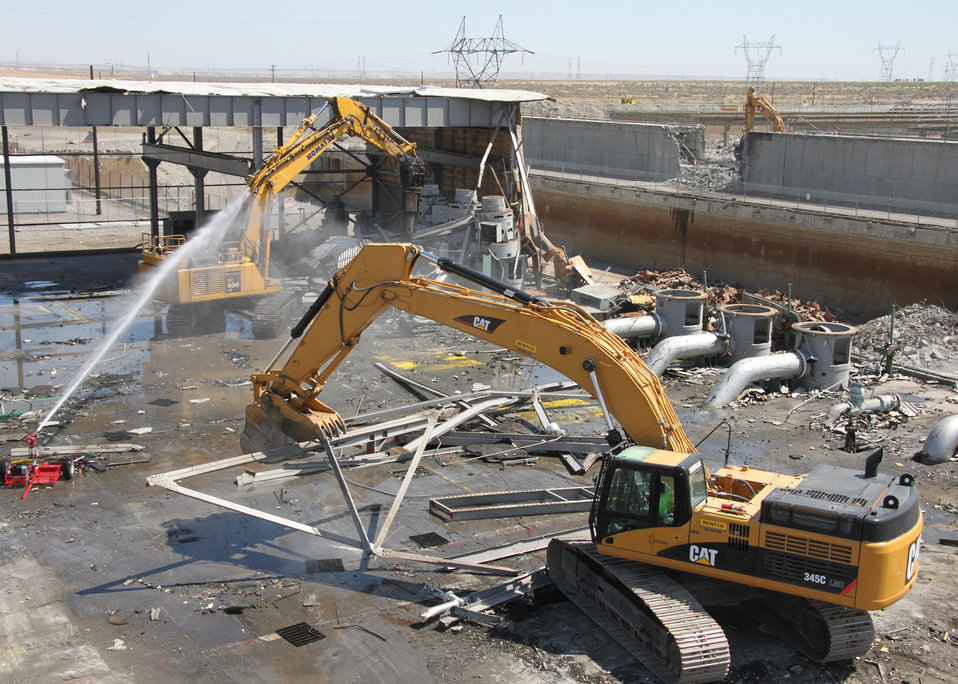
Recovery Act accelerated cleanup at Hanford

Recovery Act funds were used to accelerate demolition and remediation to shrink the cleanup area around two former plutonium production reactors.